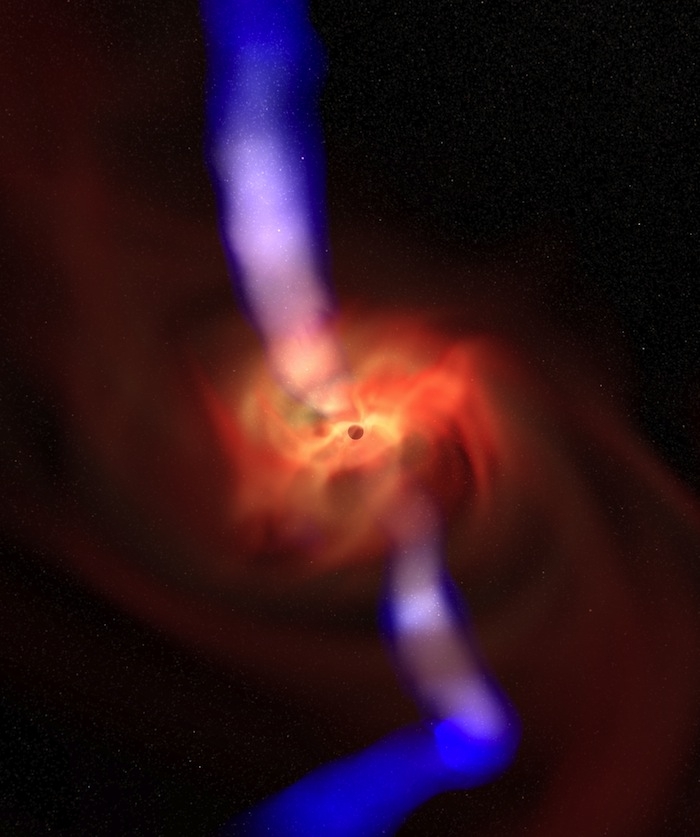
A SPINNING BLACK HOLE (AT CENTER) PRODUCES A POWERFUL JET (WHITE-BLUE) ALONG ITS SPIN AXIS.

WHILE NEAR THE HOLE, THE DISK ROTATIONAL AXIS AND JET DIRECTION ARE ALIGNED WITH BLACK HOLE SPIN AXIS, BUT FATHER AWAY THE JET DEVIATES AND EVENTUALLY POINTS ALONG THE OUTER DISK'S ROTATIONAL AXIS.